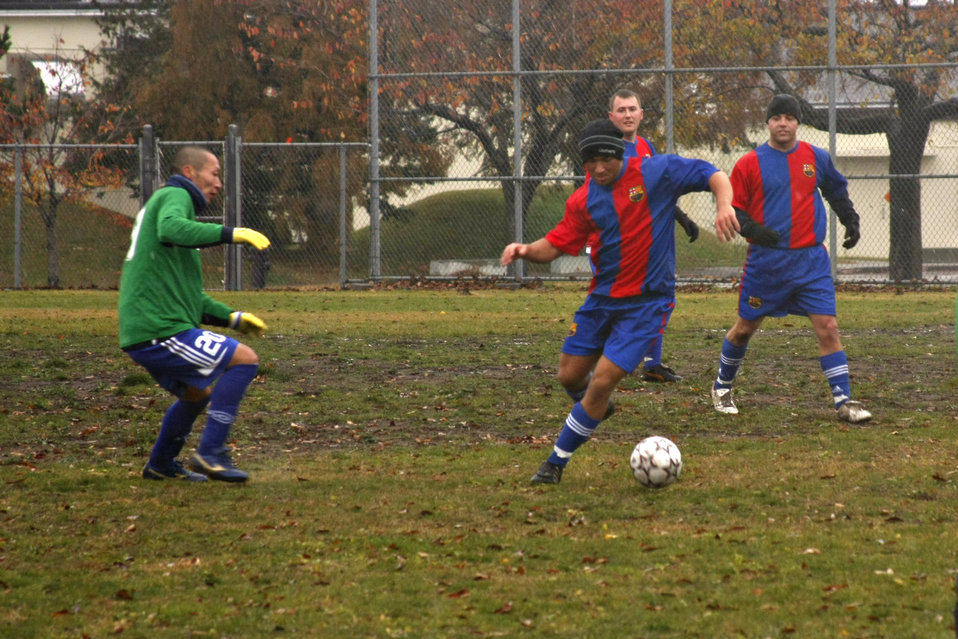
Misawa team forges international friendships on the field

Donovan Pepley intercepts a pass during an exhibition game between Misawa Dolphins and Misawa United Nov. 18 at Misawa Air Base, Japan. Misawa United finished first in their division as part of the Misawa Football Association. Pepley is an airman 1st class with the 35th Security Forces Squadron at Misawa AB.